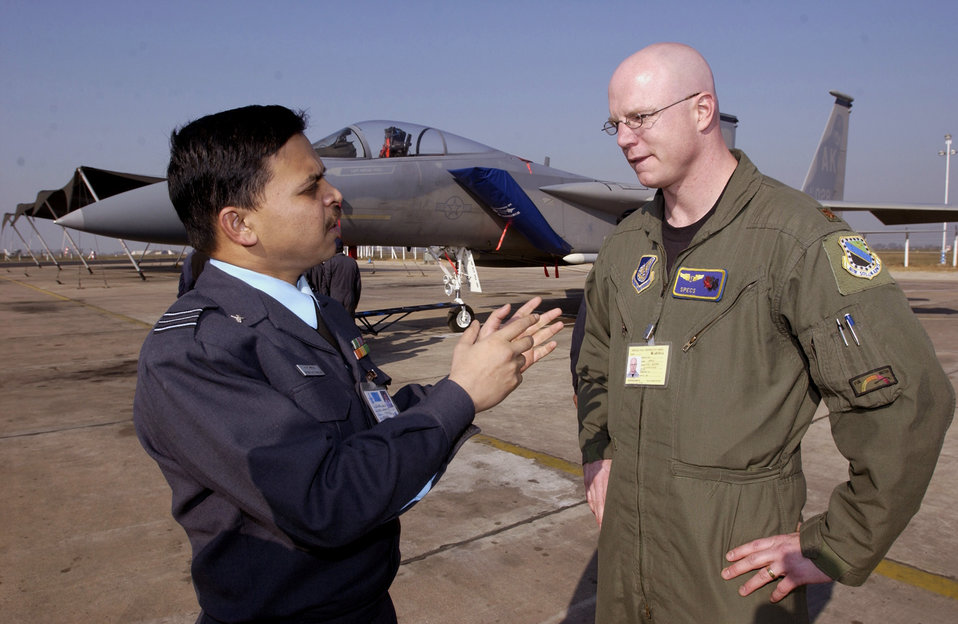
Cope India 04

GWALIOR AIR FORCE STATION, India (AFPN) -- Squadron Leader (Dr.) M.S. Nataraja (left) discusses medical issues with Maj. (Dr.) Tim McGraw here. Both doctors are participating in Cope India 04, a bilateral fighter training exercise between the American and Indian air forces. Aircraft and approximately 150 airmen from Elmendorf Air Force Base, Alaska, are deployed for the exercise.